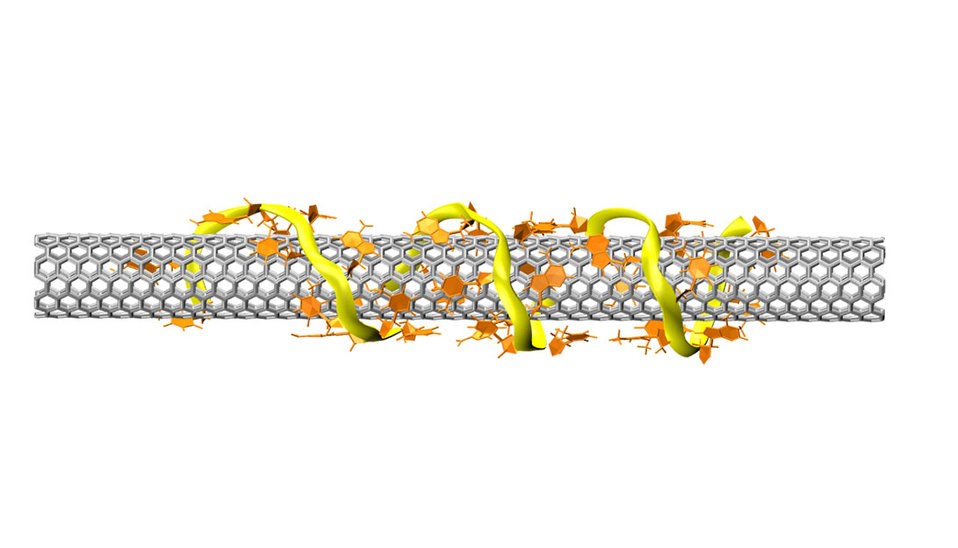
Molecular Model

Wrapped up in their work: Molecular model shows a single-strnd DNA molecule (yellow ribbon) coiled around an 'armchair' carbon nanotube.